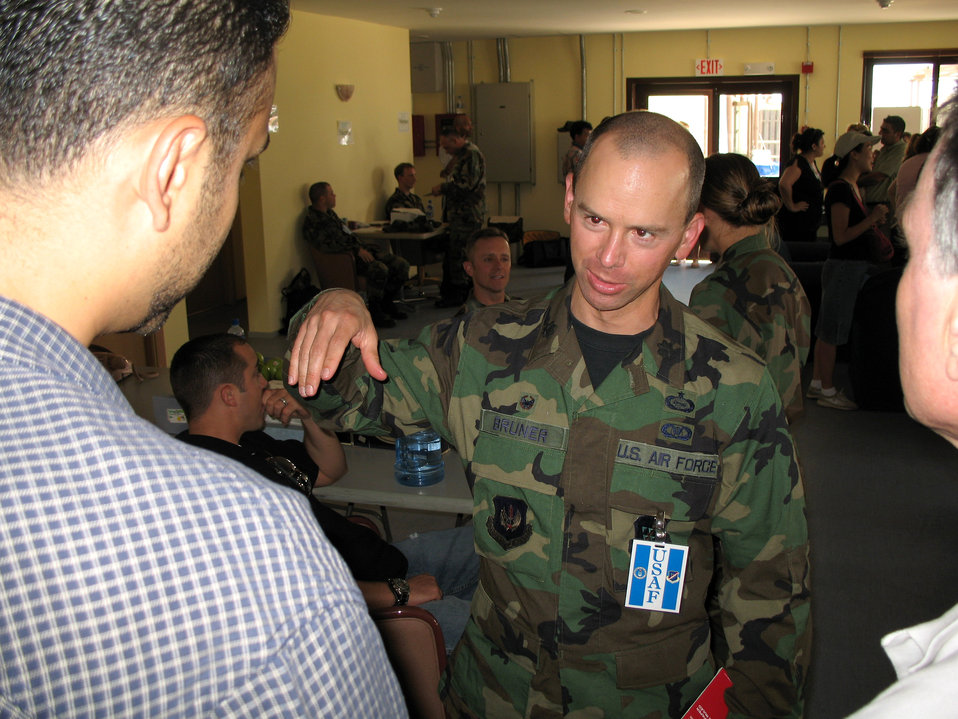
Care and comfort at Incirlik

Lt. Col. Dale Bruner talks to members of the State Department at Incirlik Air Base, Turkey, on July 22. American citizens who departed Lebanon are arriving at the base for a short stop before traveling on to the United States. Colonel Bruner is commander of the 39th Services Squadron.